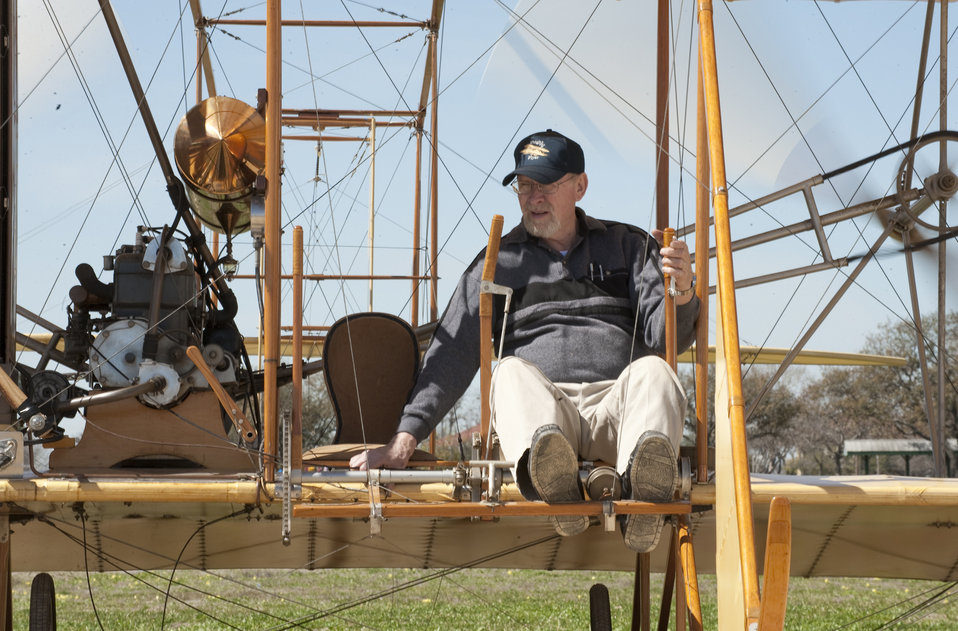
'Yellow Bird'

With the Ford Model A engine warmed up and propellers were spinning behind him, Don Gum was ready to taxi the Wright